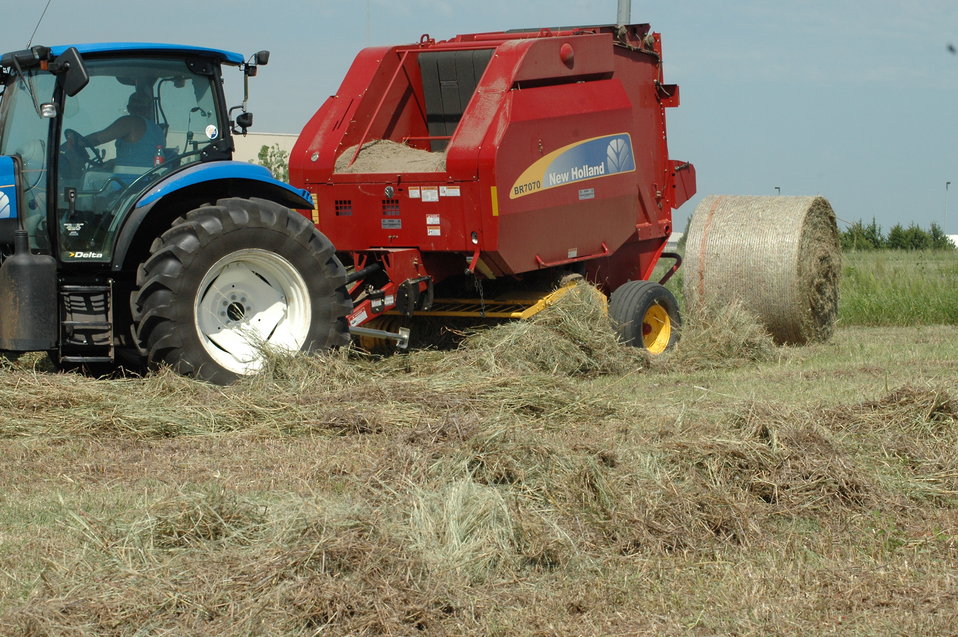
Baling hay

Under the five-year lease agreement, a local farmer nears completion of haying operations at the Tinker Aerospace Complex, Okla. Large round bales recently harvested can weigh anywhere from 600 up to 1,800 pounds, depending on size and moisture content, and will lose up to 200 pounds after nine months of storage.